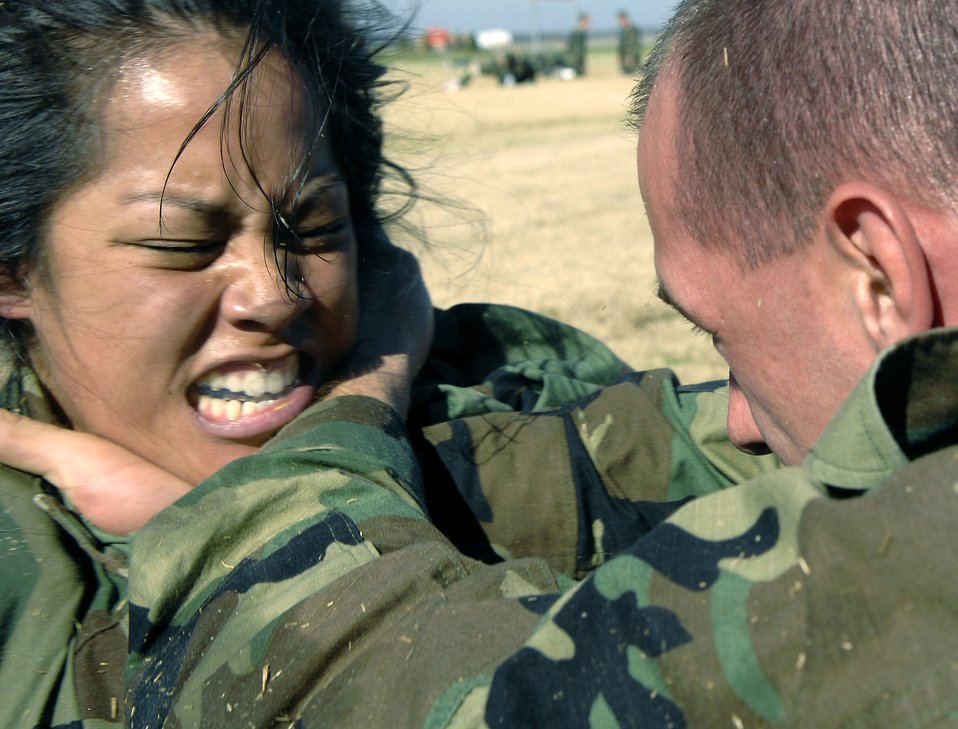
OTS begins new close combat course

Air Force officer trainees practice close-combat tactics Feb. 8 during the new Air Force Combative Program field exercise at the Officer Training School at Maxwell Air Force Base, Ala. All officer accession students are being given 11 hours of combative-skills training. Trainees learn ground fighting and basic jujitsu-style grappling moves to provide them with the confidence they need to defend themselves in combat situations.